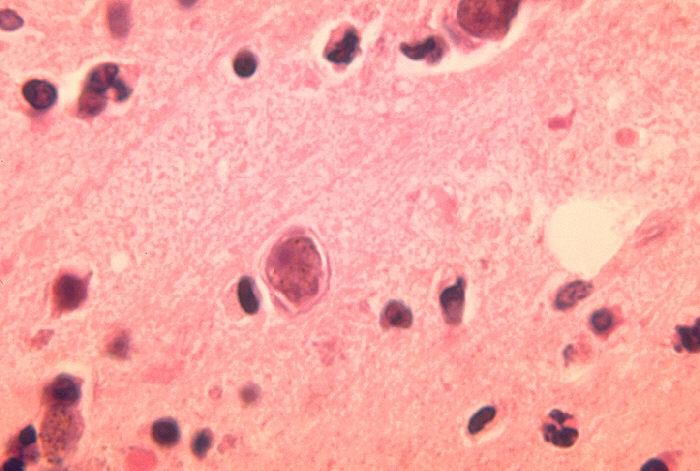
Histopathology of Acanthamoeba polyphaga infection in mouse brain.